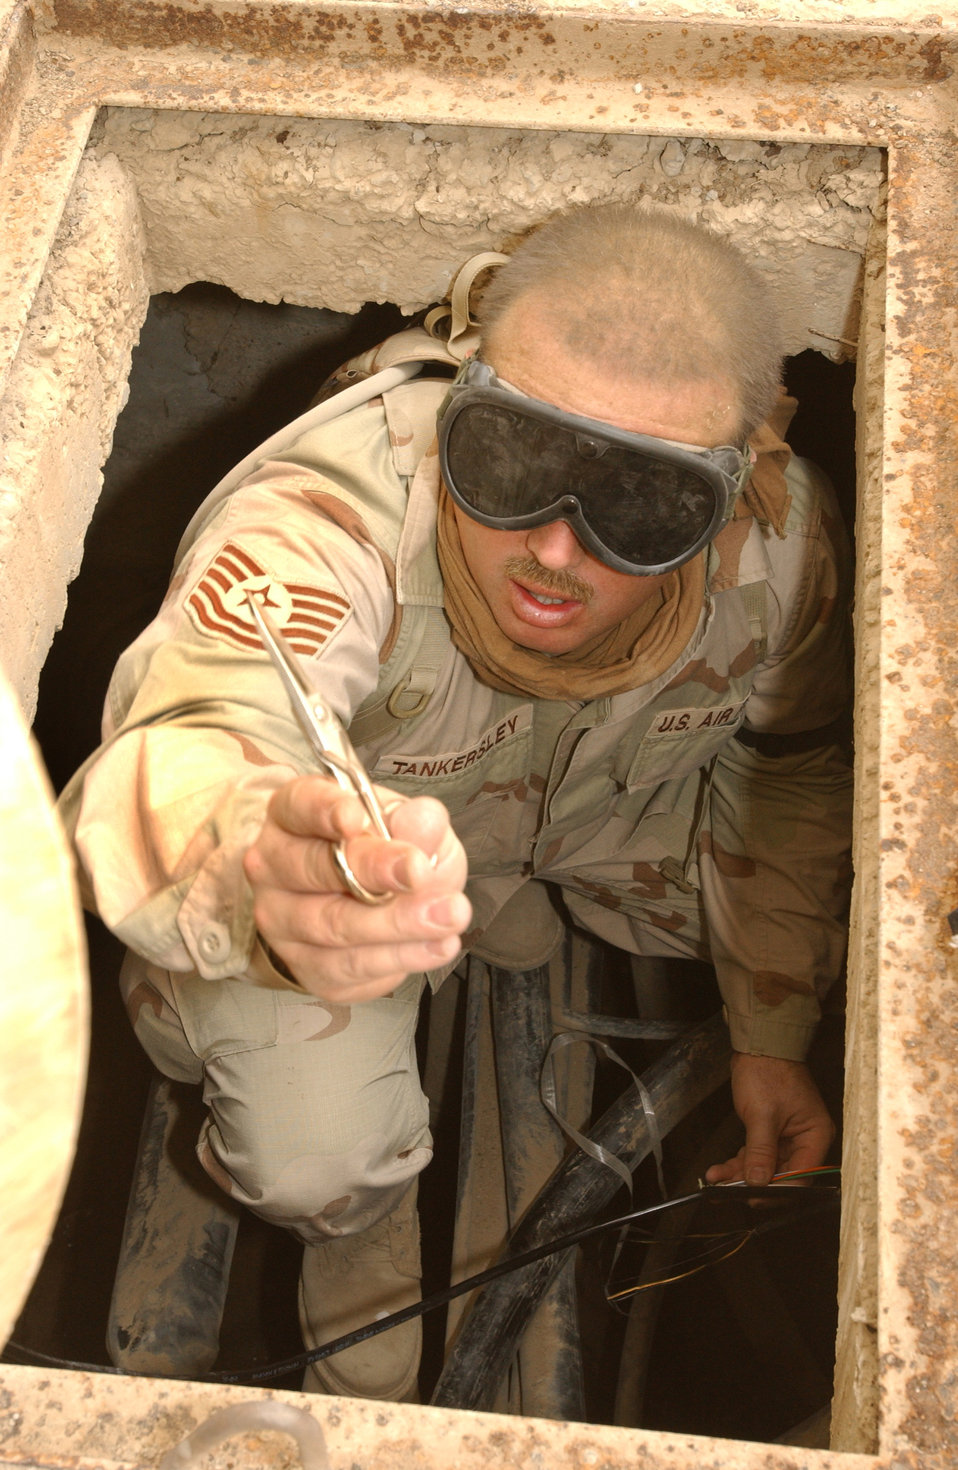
High-fiber diet

OPERATION IRAQI FREEDOM (AFPN) -- Tech. Sgt. Denny Tankersley prepares to splice fiber-optic cable at Tallil Air Base in southern Iraq. Tankersley is assigned to the 5th Combat Communications Group from Robins Air Force Base, Ga.